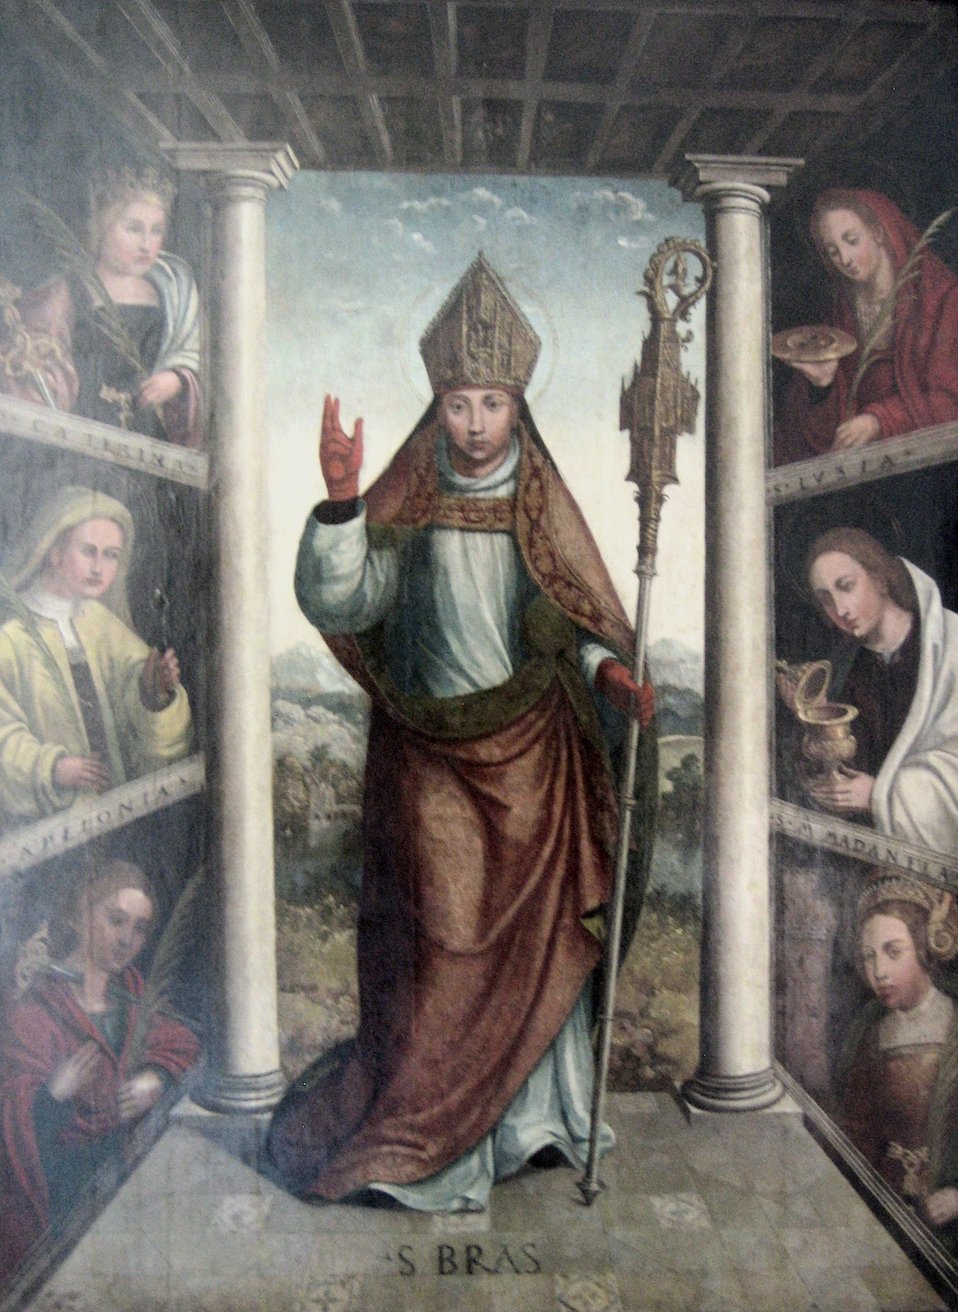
Saint Brás, oil on panel painting by the Master of the Saint Bras, 16th century, Museu de Évora, Portugal